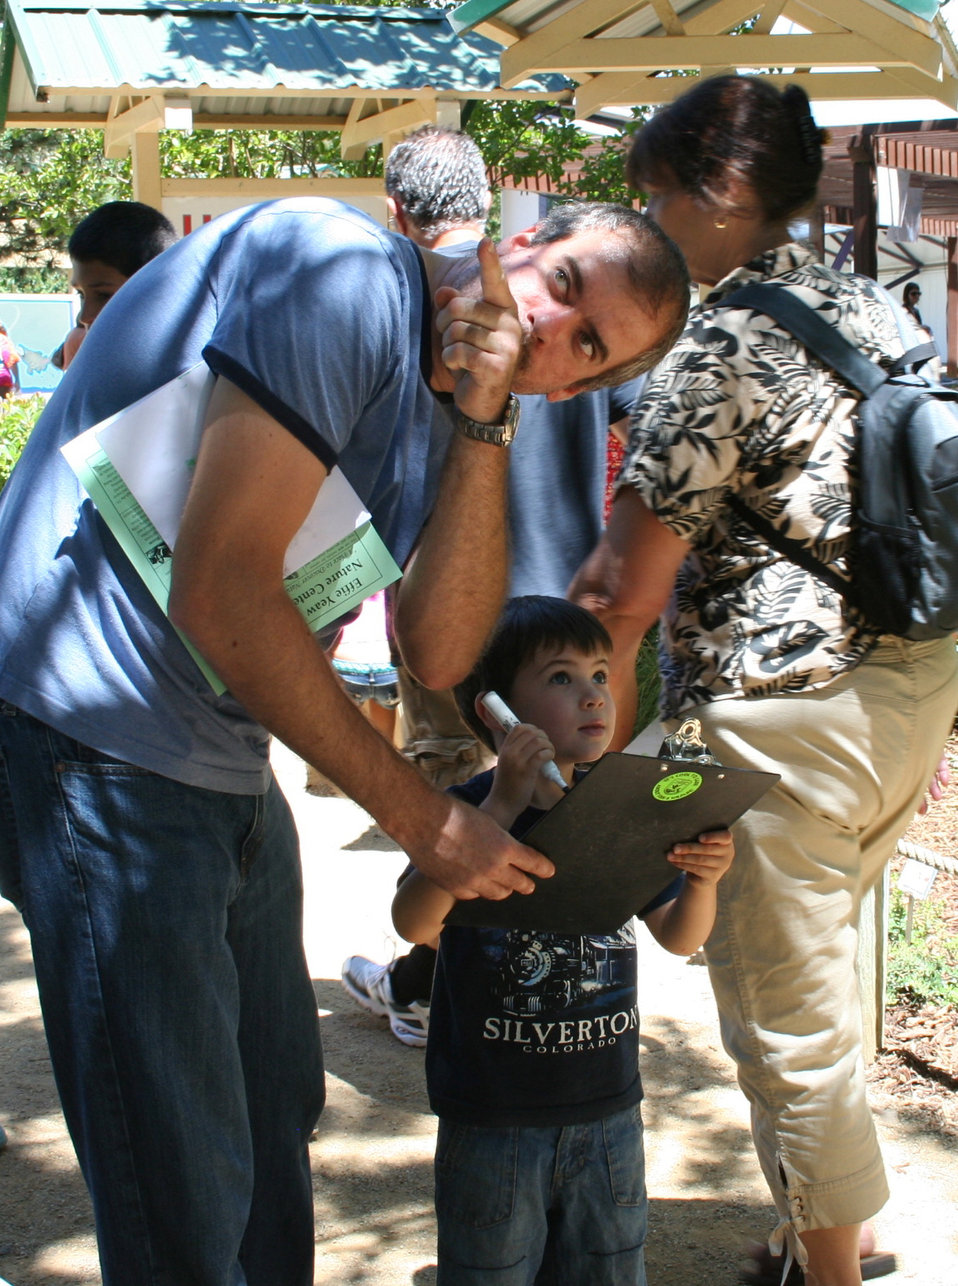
Visitor works to find all 12 birds at bird bingo

For the first time DOI agencies [US Fish and Wildlife Service, Bureau of Reclamation and Bureau of Land Management] joined together to host an America's Great Outdoors Booth at the California State Fair in Sacramento, Calif., July 14 - 31.

The booth included informational panels and displays as well as a children's activity area. Activities: wildlife masks, temporary tattoos, water-cycle bracelets, fish prints, touch boxes, scat bingo, a green-screen, coloring and bird bingo. Five days a week live raptors, snakes and bats were brought in.

About 50,000 children visitied the booth during the 18-day fair.